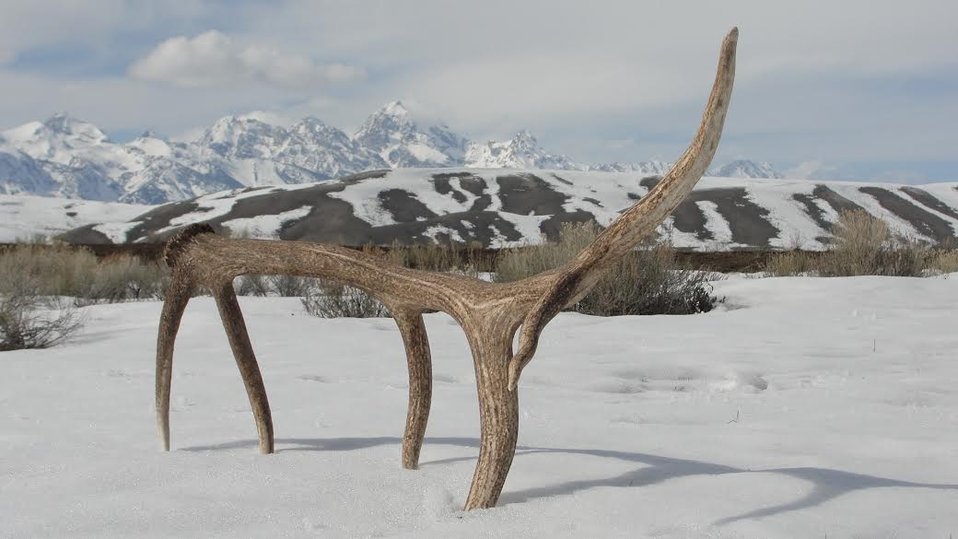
Interesting Composition

A biology technician found this elk antler as is on the National Elk Refuge, perfectly positioned for an interesting photo.